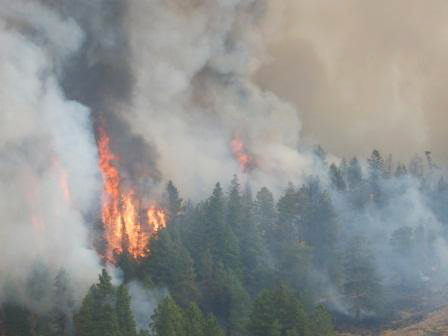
The Colockum Tarps Fire southwest of Malaga, WA began on Jul. 27, 2013 is under investigation. The fire has consumed approximately 70,000 acres and is approximately 25% contained.